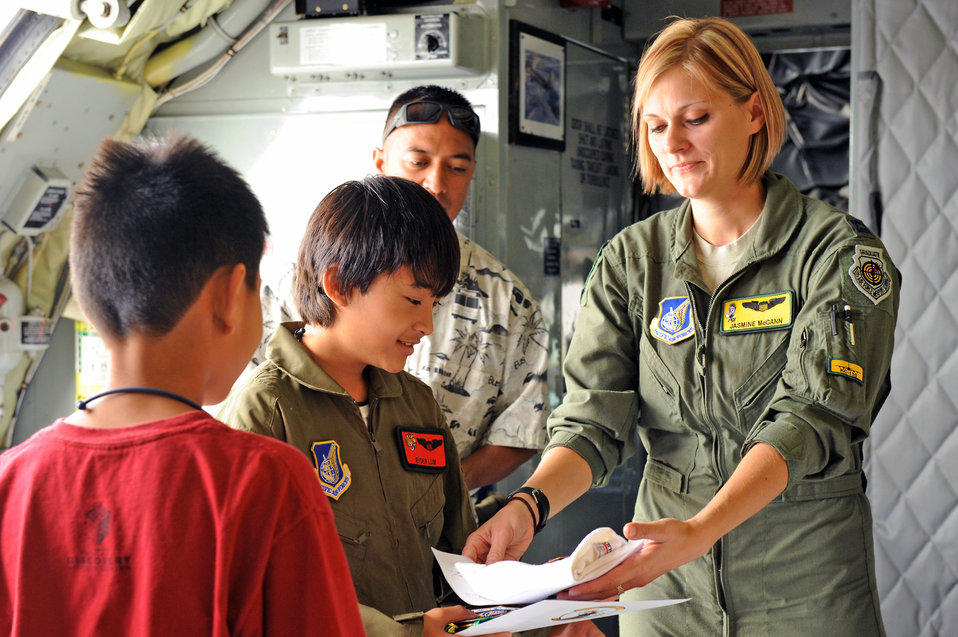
11-year old becomes a pilot

Capt. Jasmine McCann gives 11-year-old Ryder Lum and his best friend Everett Fan mementos from their tour of a KC-135 Stratotanker Oct. 29, 2010, at Joint Base Pearl Harbor-Hickam, Hawaii. Ryder was part of the 535th Airlift Squadron's quarterly Pilot for a Day program, which allows children with catastrophic disorders or illnesses to experience a day in the life of an Air Force pilot.